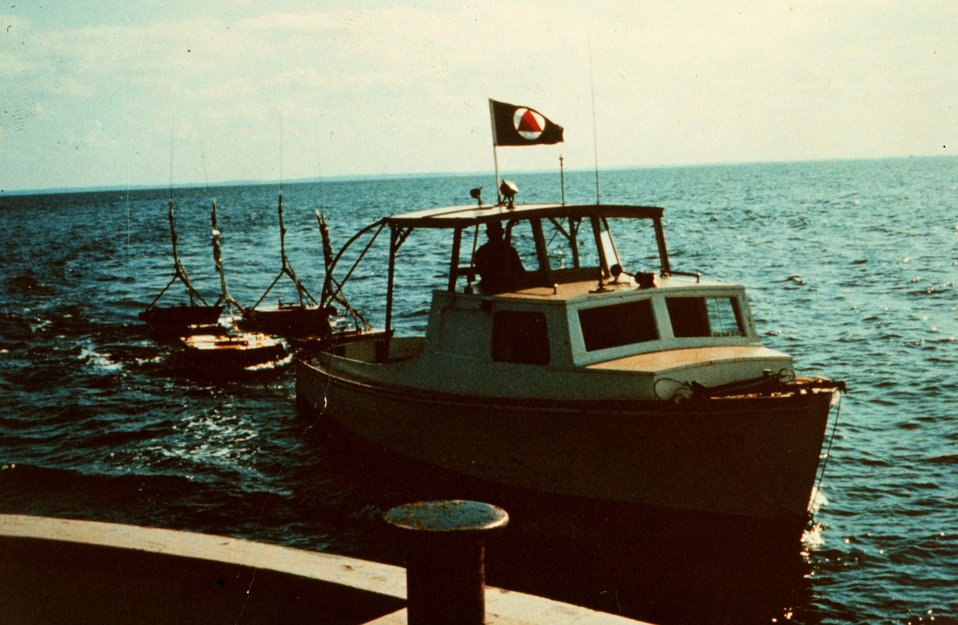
Launch towing 4 current buoys to area not accessible by ship. Launch off of MARMER.